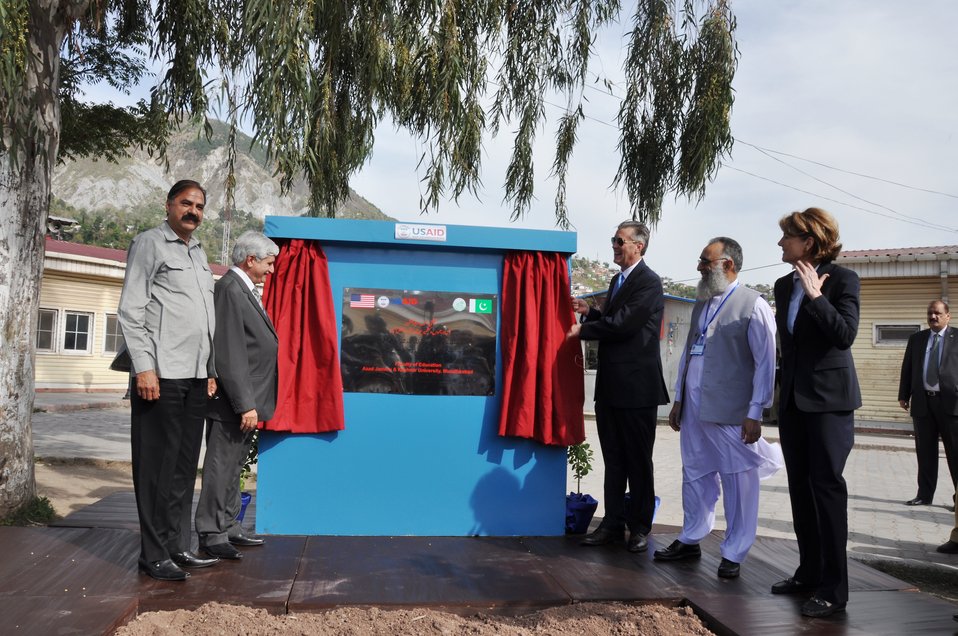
The United States Ambassador to Pakistan, Richard Olson broke ground for a U.S. funded construction of a new Faculty of Education building in Muzaffarabad, AJK. 16